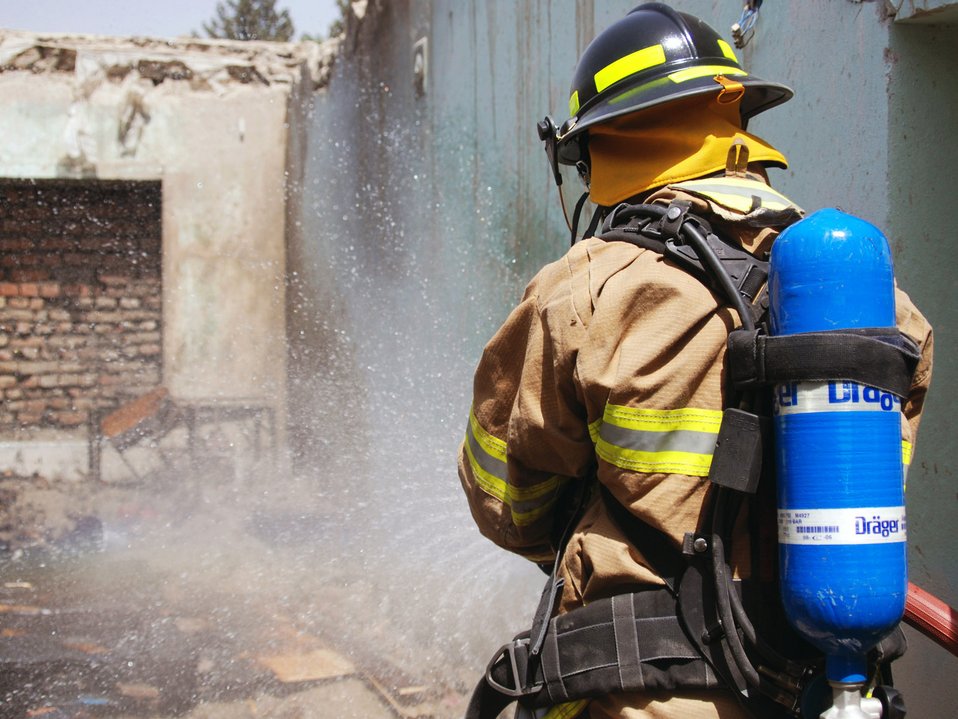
Afghan student firefighters put to the test

A member of the Afghan National Army Air Corps hoses down the charred remnants of a fire during an exercise May 12 at Kabul, Afghanistan, during a firefighting course. The four-month course has been conducted under the sole mentorship of Master Sgt. Michael Marascia of the Combined Air Power Transition Force, who is deployed from Langley Air Force Base, Va.